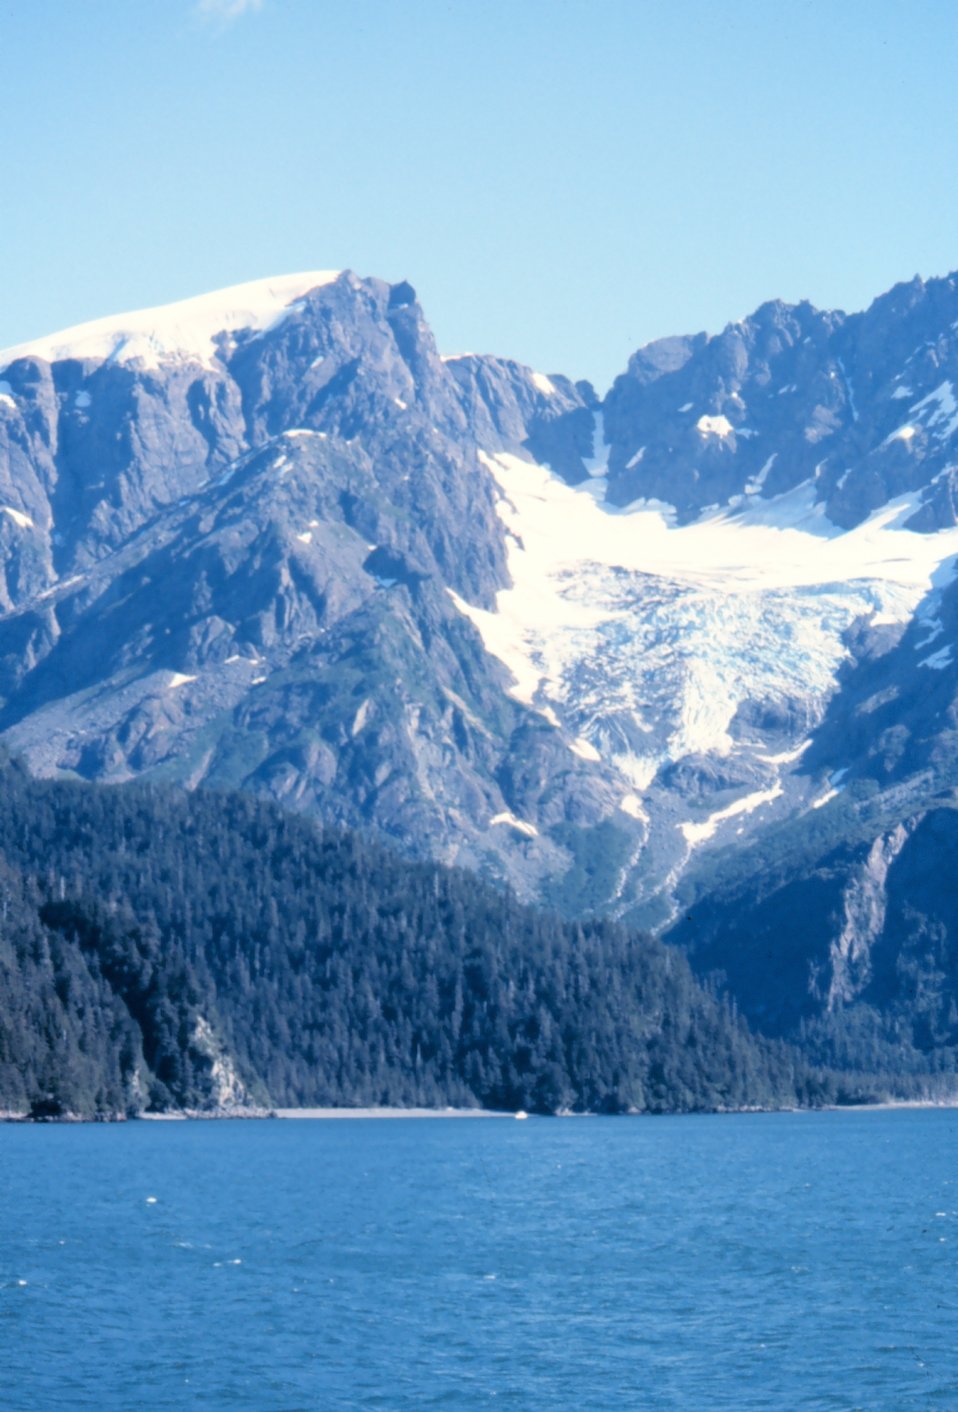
A hanging glacier somewhere in southern Alaska